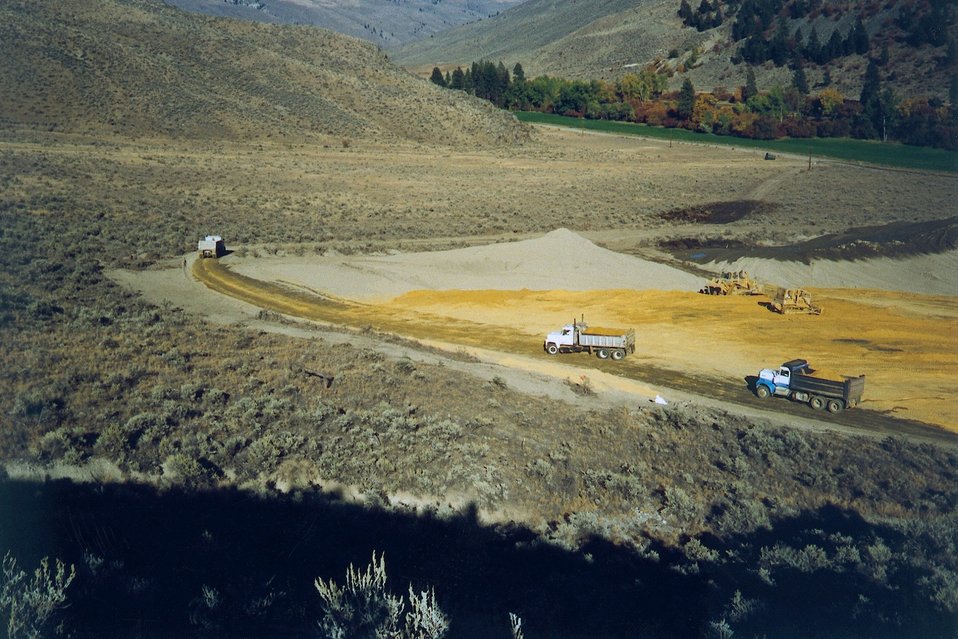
AML. Kaaba-Texas Mine Repository Area, Tailings.